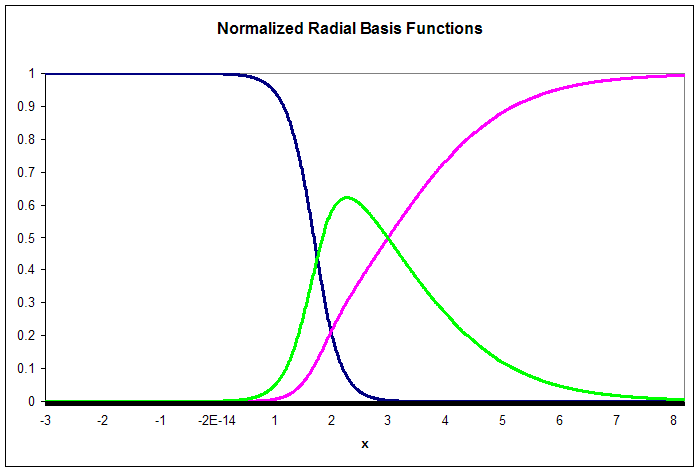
Radial basis function - Figure 4: Three normalized radial basis functions in one input dimension. The additional basis function has center at c3 = 2.75